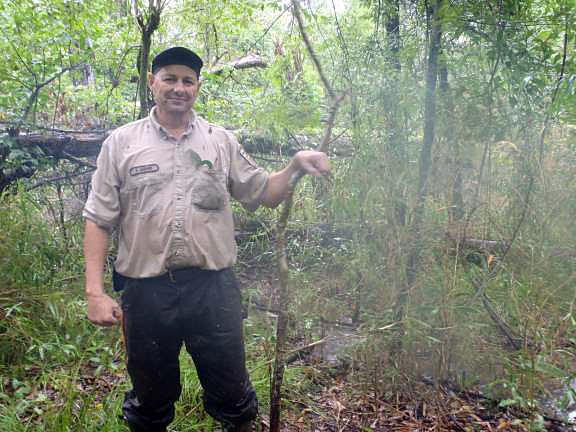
Thomas Adams -- Southwest Region

Thomas Adams, a Botanist with the Texas Midcoast National Wildlife Refuge Complex, served in the Marines.